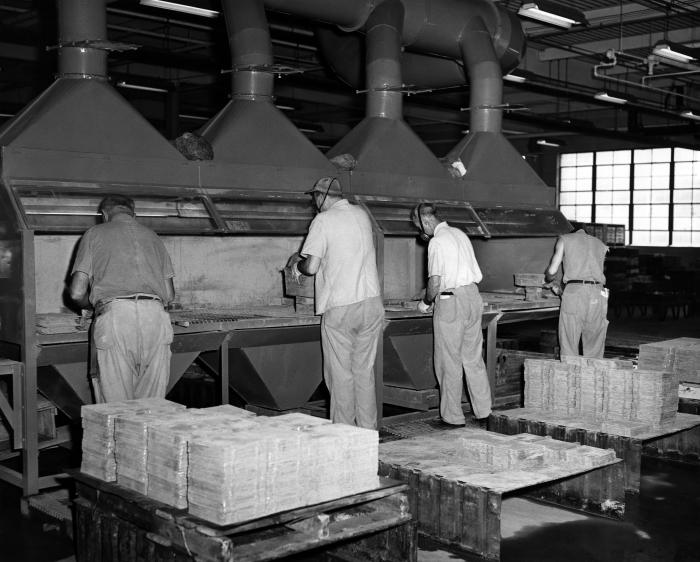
This May 19, 1953 photograph was provided by the Center for Disease Control's (CDC), National Institute for Occupational Safety and Health (NIOSH). The image depicted four industrial plant employees, as they were cleaning lead plates in an electric-storage battery factory. Note that while at their work stations, all the workers were using only minimal personal protective equipment, consisting of dust masks and gloves.Workers can be exposed to lead through inhalation of fumes and dusts, as well as through ingestion as a result of lead-contaminated hands, food, drinks, cosmetics, tobacco products, and clothing. Furthermore, workers can take lead home on their clothes, skin, hair, tools, and in their vehicles, potentially exposing their families to this element's harmful health effects.